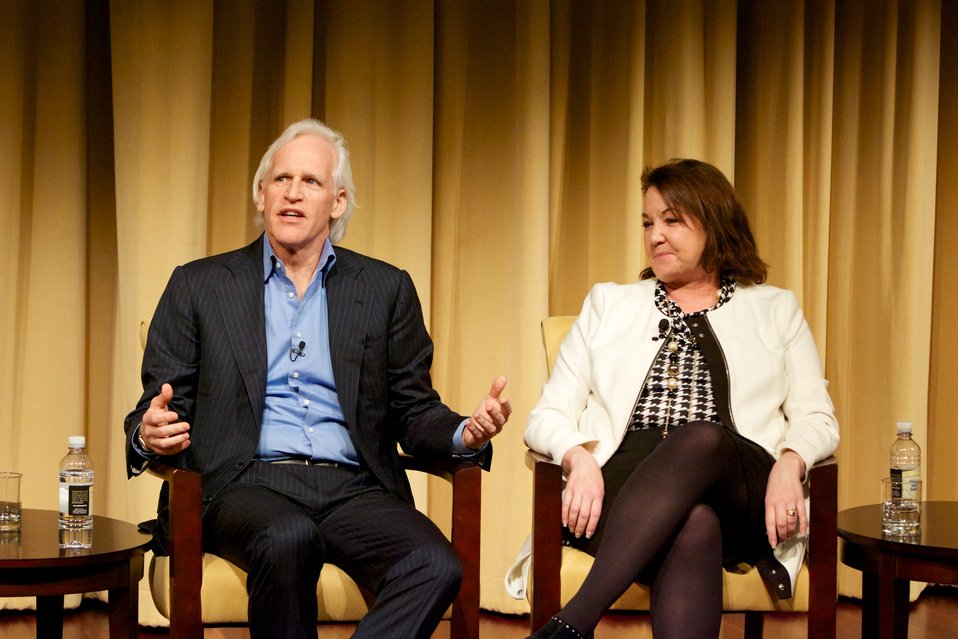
The Monuments Men; Robert M. Edsel (left), author, and Nancy H. Yeide (right), Head of the Department of Curatorial Records at the National Gallery of Art